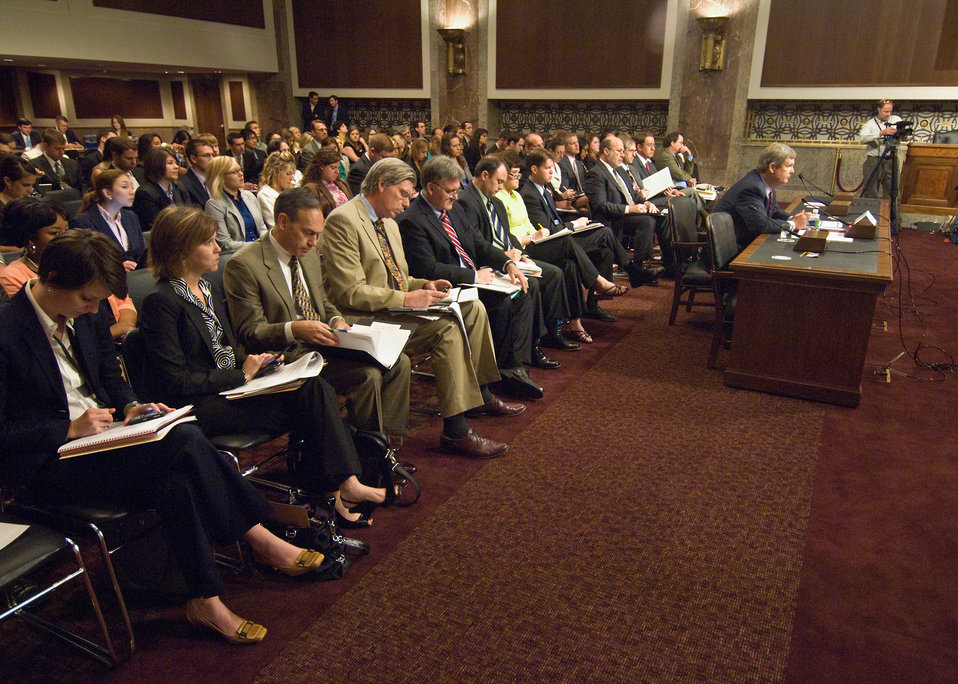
Joseph Glauber, Chief Economist, William Murphy, Administrator, Risk Management Agency and Jonathan Coppess, Administrator, Farm Service Agency, Krysta Harden, Assistant Secretary, Congressional Relations and David Lazarus, Senior Advisor accompanied Agriculture Secretary Tom Vilsack to a Senate hearing on the farm bill on Capitol Hill in Washington, DC, on Wednesday, June 20, 2010. The farm bill is an important piece of legislation that Congress considers on behalf of rural America, our farmers and ranchers. USDA Photo 10di1425-030.